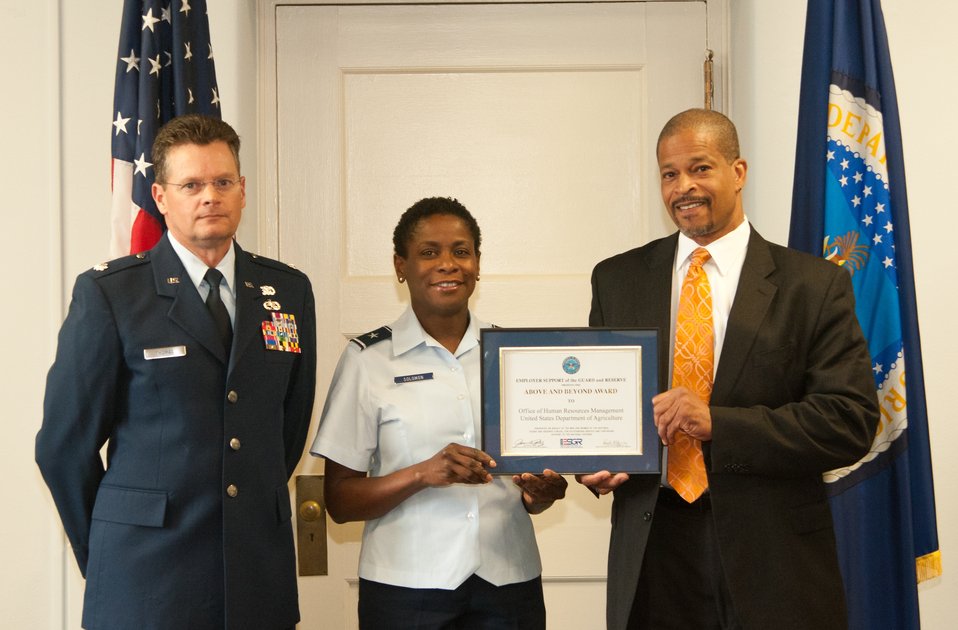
Brigadier General Allyson Solomon presents the Above and Beyond Award to the U.S. Department of Agriculture (USDA) Office of Human Resources Management (OHRM) in Washington, D.C. on Wednesday, May 15, 2013 for their service to Lieutenant Colonel Thomas during his deployment to Djibouti, Africa. (L to R Air National Guard Lieutenant Colonel and U.S. Department of Agriculture (USDA) Office of Human Resources Management (OHRM) Human Resource Specialist Mark Thomas, Maryland National Assistant Adjutant General-Air Guard Brigadier General Allyson Solomon, and U.S. Department of Agriculture (USDA) Office of Human Resources Management (OHRM)Deputy Director Billy Milton).